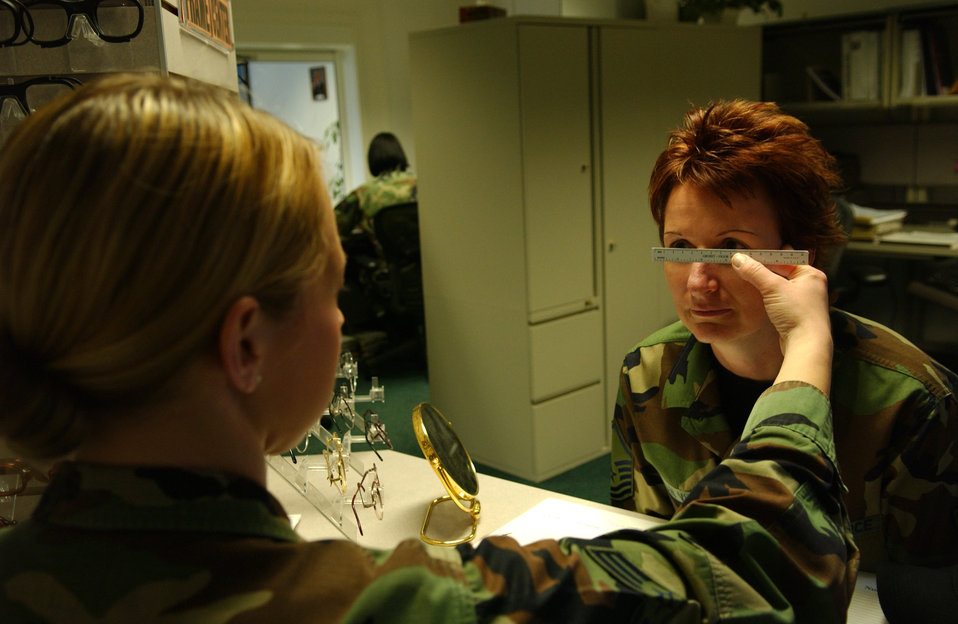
Eye check

Senior Airman Holly Klug measures the diameter of Master Sgt. Carrie VanVlack's eyes for a new pair of glasses. Sergeant VanVlack is assigned to the 435th Logistics Readiness Squadron at Ramstein Air Base, Germany. Airman Klug is an optometry technician with the 435th Aerospace Medicine Squadron.